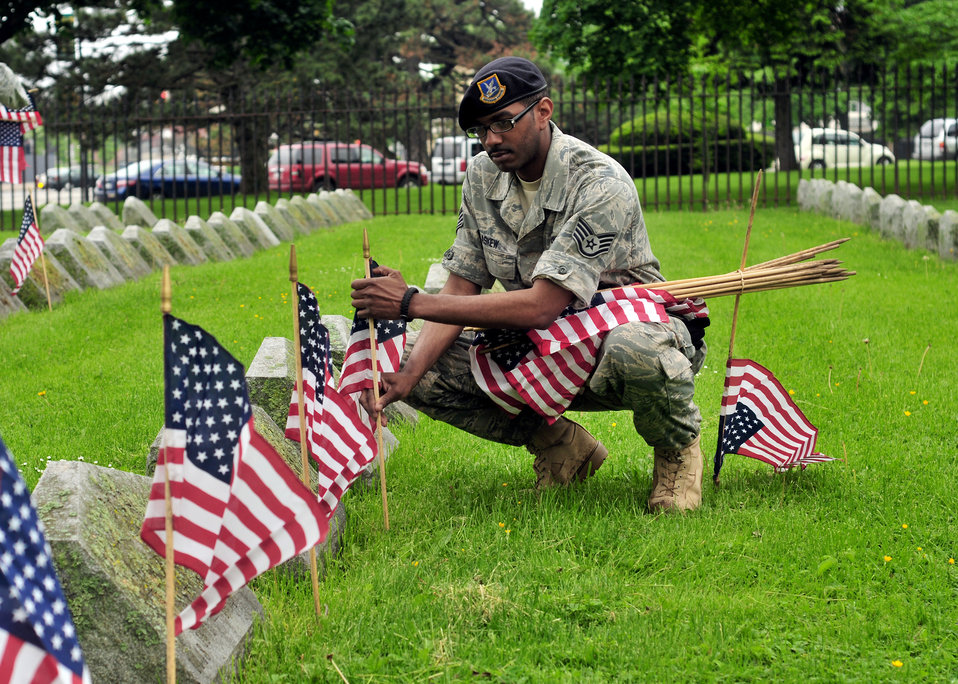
Honoring the fallen

Staff Sgt. Marvin Askew places an American flag on a grave during a Memorial Day ceremony May 30, 2011, at Forest Lawn Cemetery in Buffalo, NY.